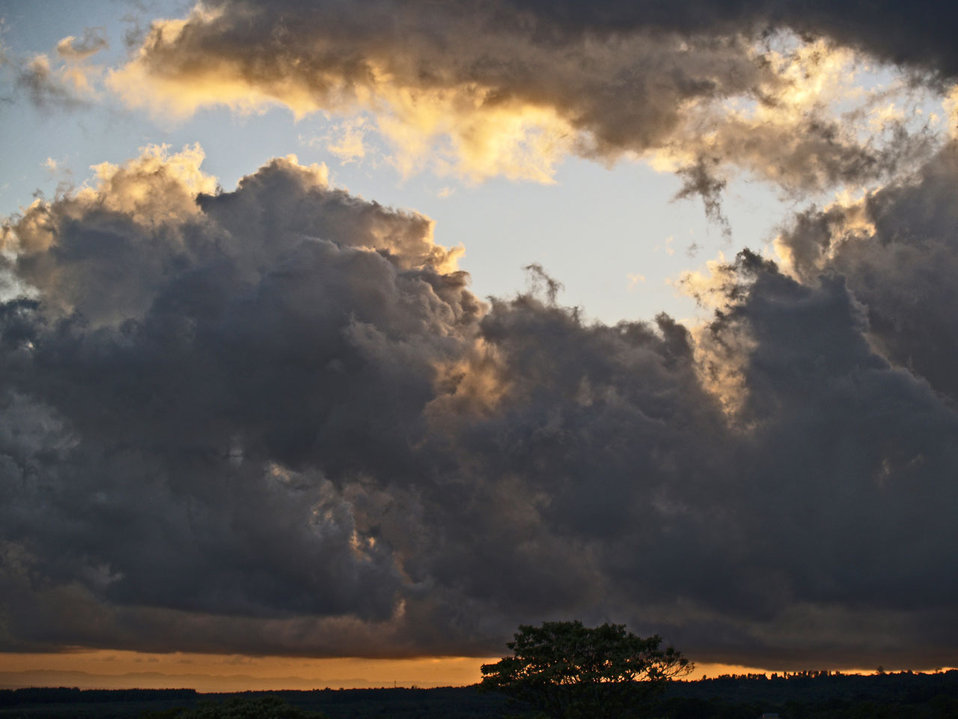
Sunset in boquete, panama

Cloud formation over panama.